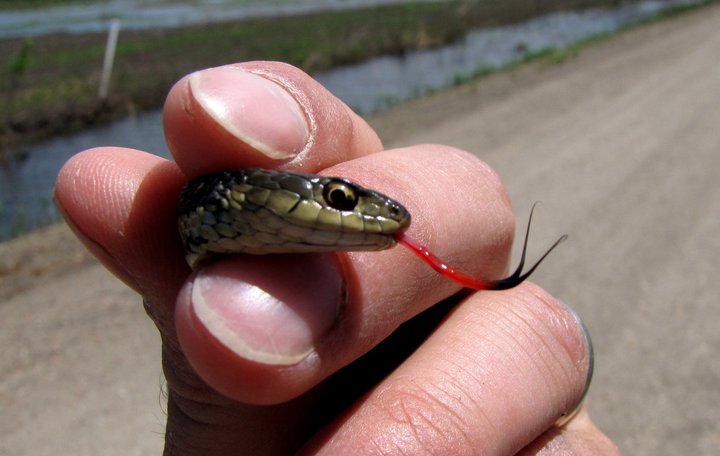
eastern garter snake

Port Louisa National Wildlife Refuge